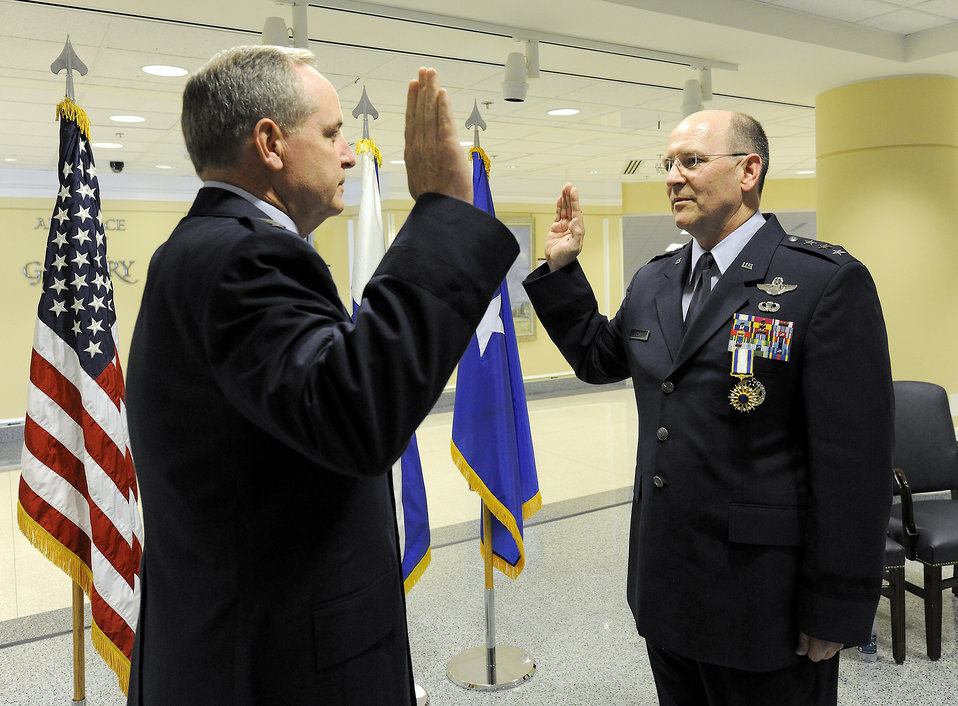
AFRC commander promoted

Newly-promoted Lt. Gen. James Jackson recites the oath of office to Air Force Chief of Staff Mark A. Welsh III during his promotion ceremony at the Pentagon on Aug. 16, 2012. Jackson is the commander of Air Force Reserve Command and chief of the Air Force Reserve.